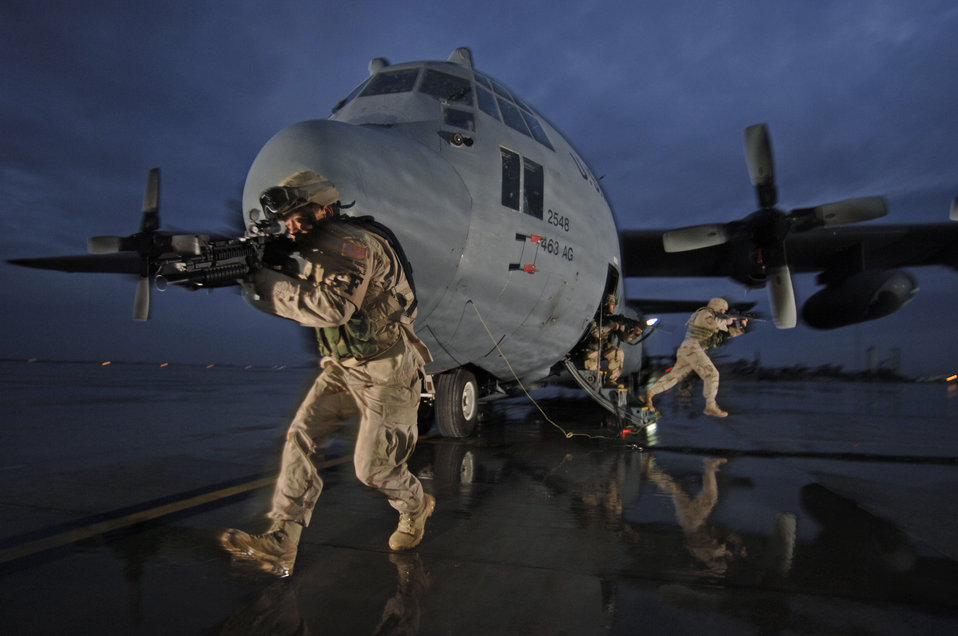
Aircraft security

BALAD AIR BASE, Iraq -- Left to right, Staff Sgt. Tony Rivera, Senior Airmen Jason Bauer and Darryll Morley, with Staff Sgt. Jason Sawyers, at rear of aircraft, provide dedicated aircraft security for this C-130 Hercules here.